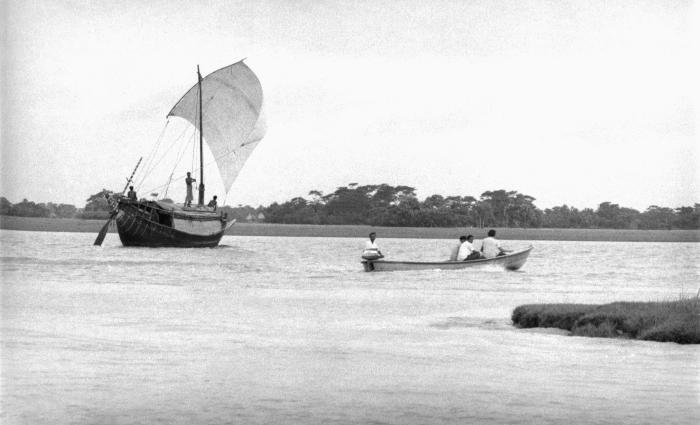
This image depicted the juxtaposition of 'old' and 'new' modes of transport. In the background, a river sailing boat was traveling using the wind as its power source, while speeding past towards the right was a gasoline-powered motor boat. This image was part of a series provided by Dr. Stan Foster, and captured by Pierre Claquin, M.D., B.A.C., who at the time was a member of the World Health Organization's Smallpox Eradication Program. It was part of a series photographed by former E.I.S. officer, Stanley O. Foster M.D., M.P.H., and was one of a series entitled 'The Story of One Smallpox Jeep', which depicted the travails faced by the jeep, and its occupants of public health practitioners, as they road through the Bangladesh countryside in an attempt to eradicate smallpox from the country.